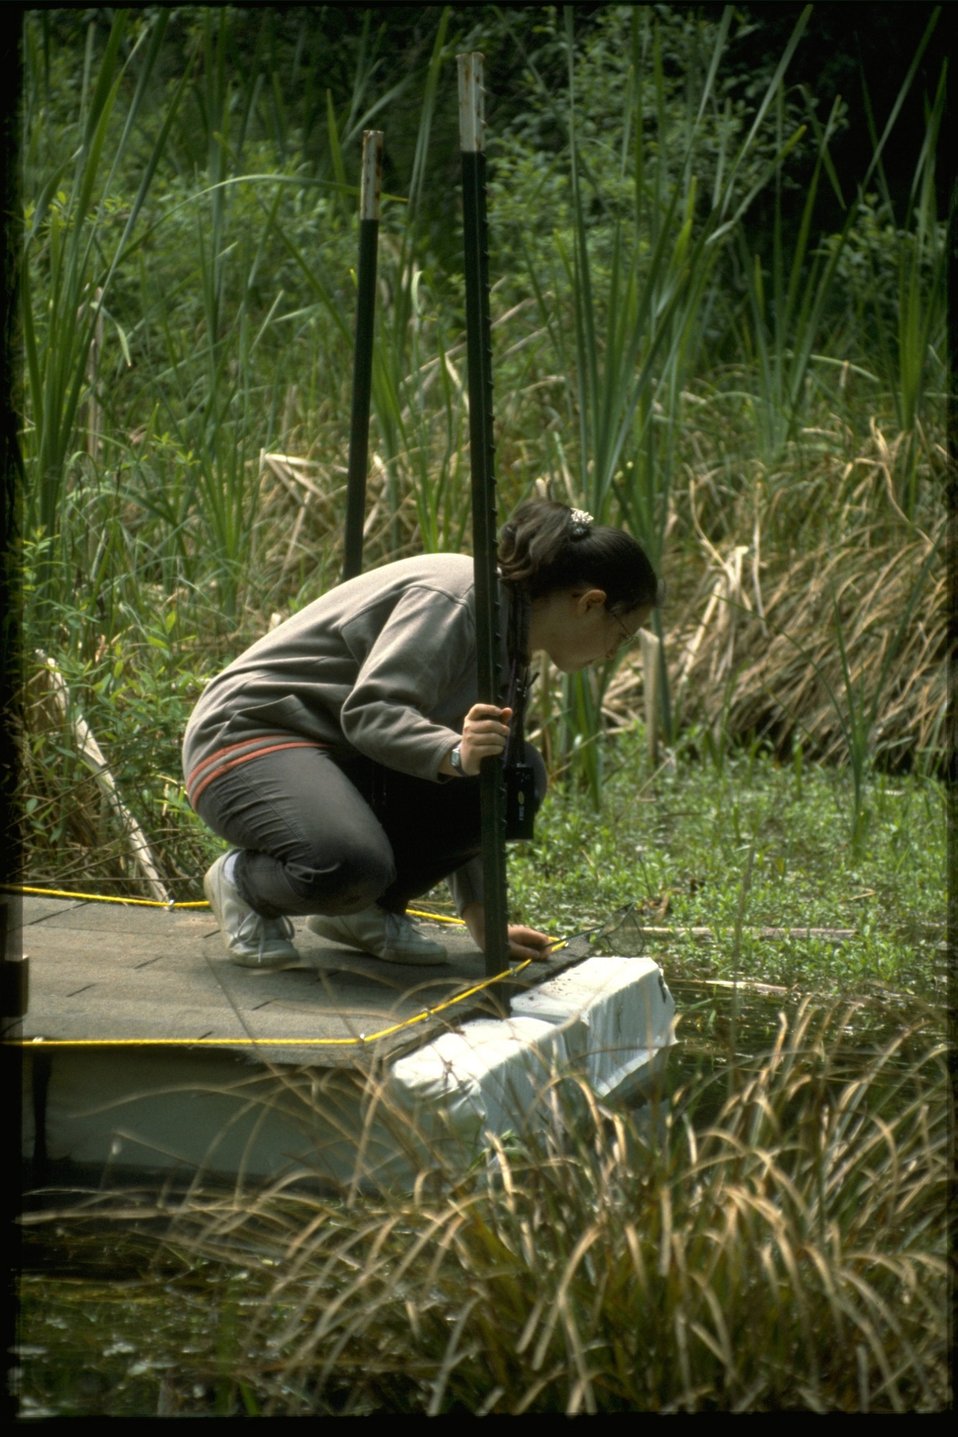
Cascade Stream Watch at the Wildwood Recreation Site.